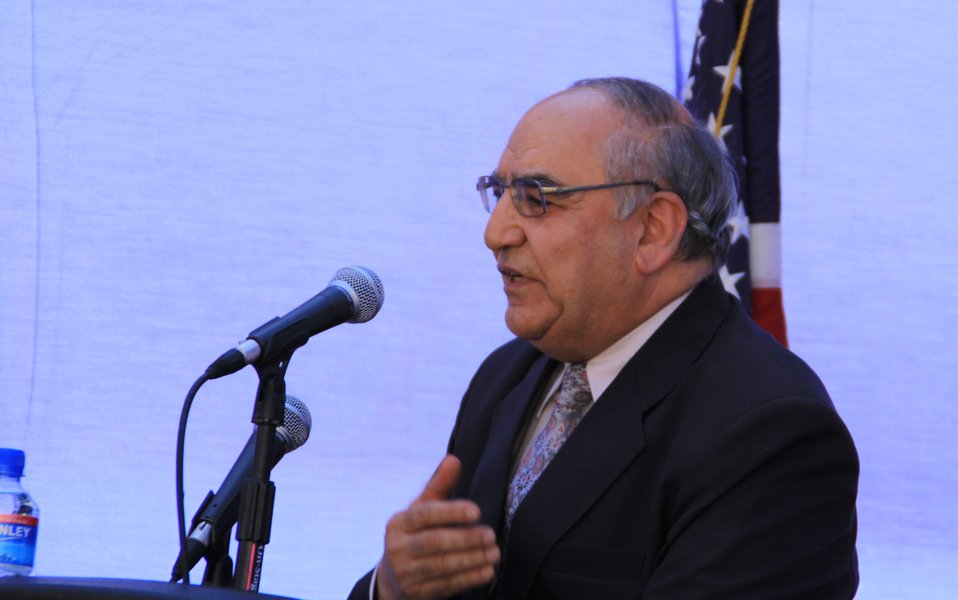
105 MW Tarakhil Power Plant Handover